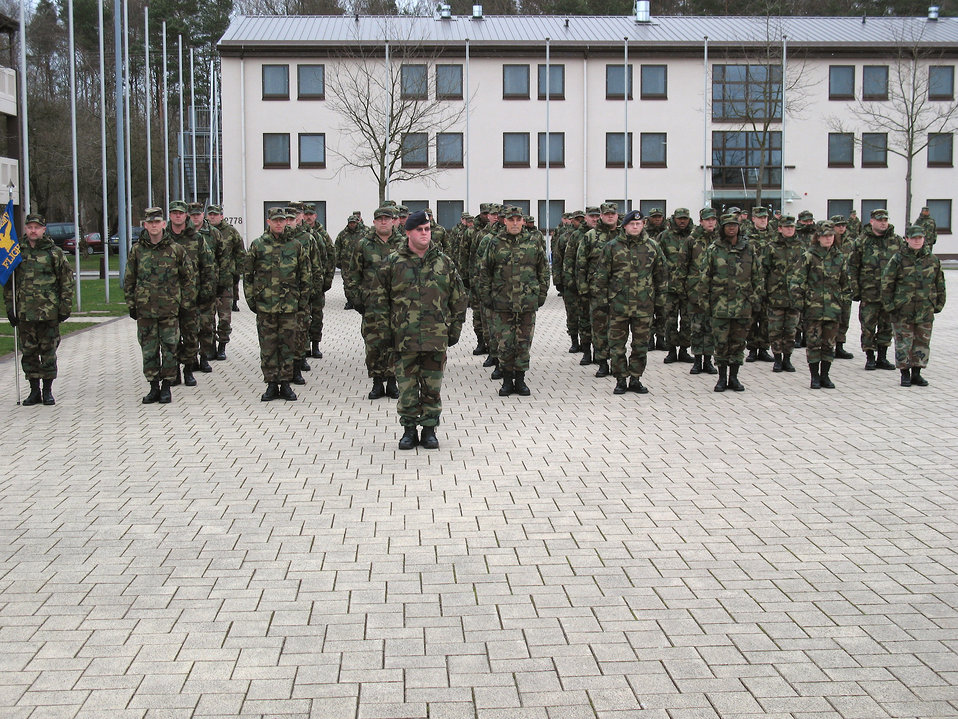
NCO academy focuses on leadership, communication

Students from Kisling NCO Academy Class 2007-2 stand in formation at a retreat ceremony Jan. 30 at Kapaun Air Station, Germany. In addition to learning about communication, leadership skills and the profession of arms, students also participate in ceremonies such as reveille and retreat.